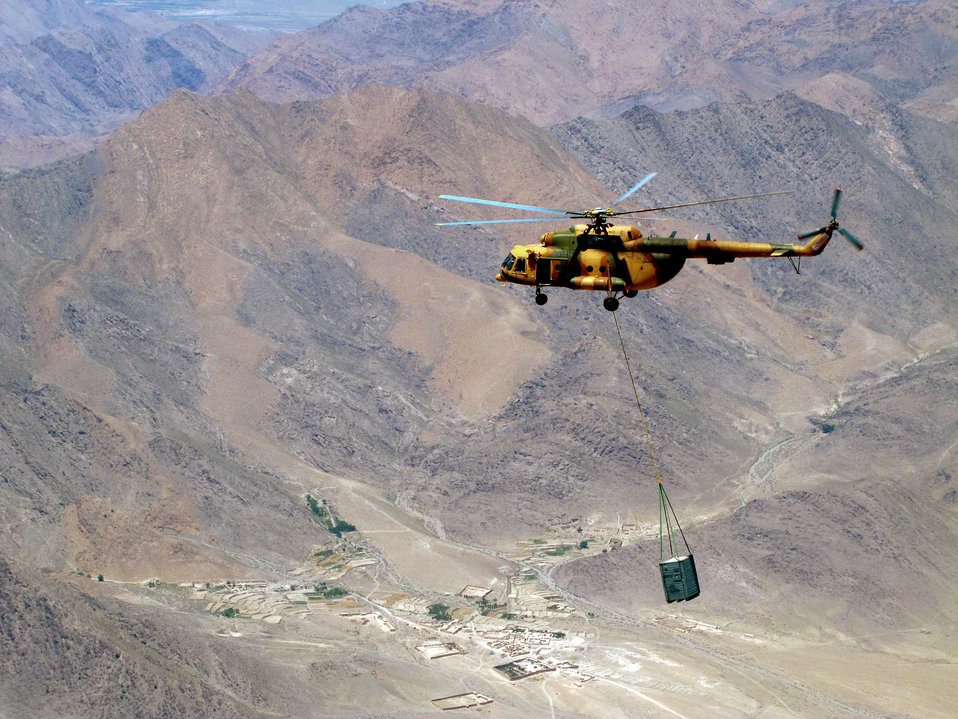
No landing zone, no problem

Afghan airmen and Combined Air Power Transition Force advisers conduct an operational sling load with the Mi-17 transport helicopter July 1, 2010, to Forward Operating Base Orgun-e, Afghanistan.